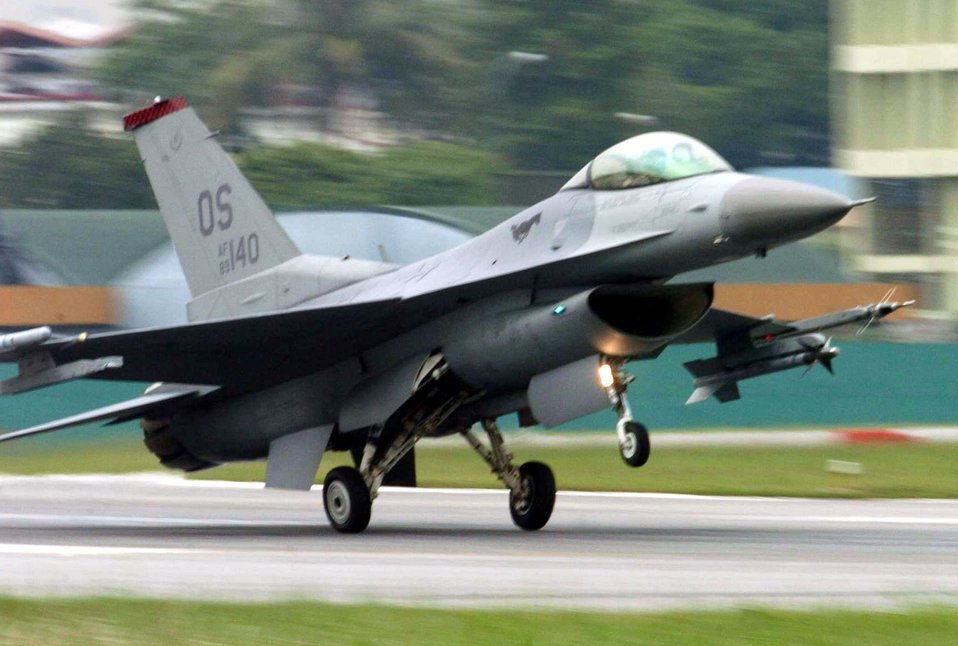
U.S., Singaporean Airmen train together

PAYA LEBAR AIR BASE, Singapore -- An F-16 Fighting Falcon from the 36th Fighter Squadron at Osan Air Base, South Korea, lands here after a mission during Commando Sling 04-3. U.S. and Singaporean Airmen trained together using realistic dissimilar aircraft air-to-air combat tactics.